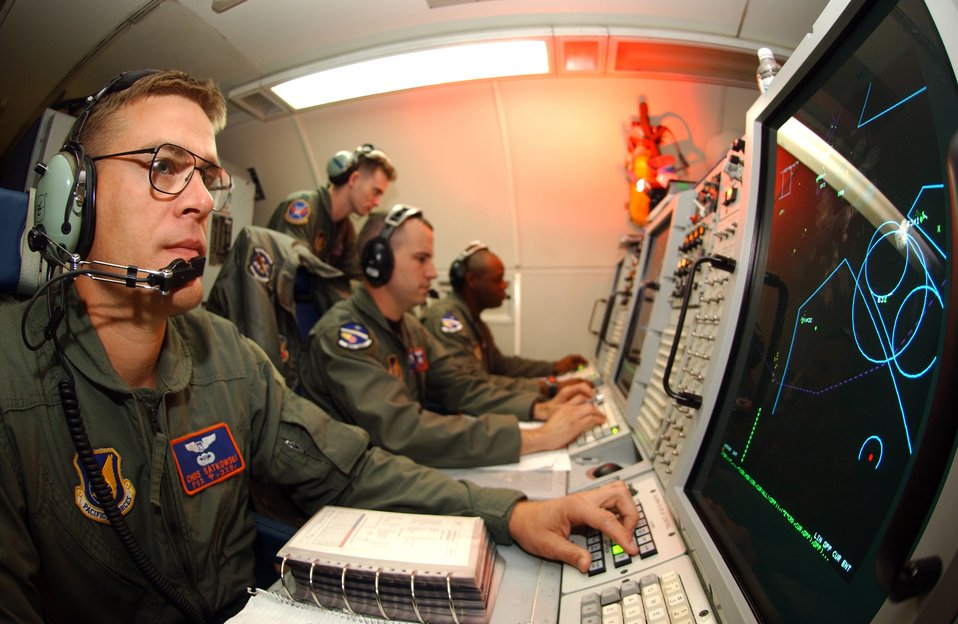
Verify and control

KADENA AIR BASE, Japan -- First Lt. Chris Satkowski, an air weapons officer, and other air battle managers verify and control fighter aircraft during a live air-to-air training scenario July 26. They are assigned to the 961st Airborne Air Control Squadron.